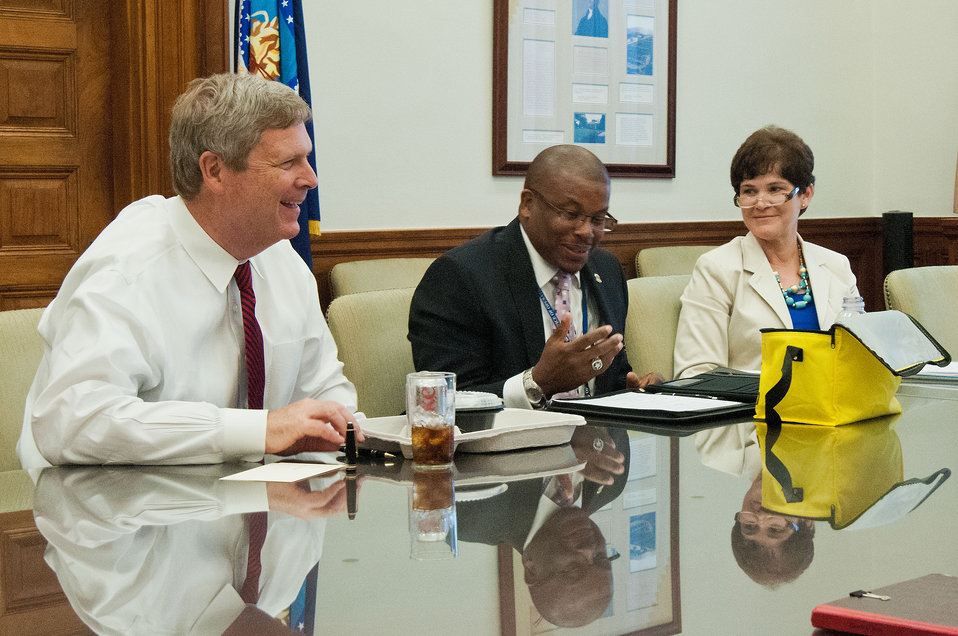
Agriculture Secretary Tom Vilsack (left) and Tony Myers (center), Departmental Management and Krysta Hardin (right), Chief of Staff share a laugh with United States Department of Agriculture employees during a Brown Bag lunch at the United States Department of Agriculture in Washington, D.C., on Wednesday, July 25, 2012. Secretary Vilsack holds Brown Bag Lunches to discuss the role United States Department of Agriculture employees play and to thank them for their dedication and diligence.